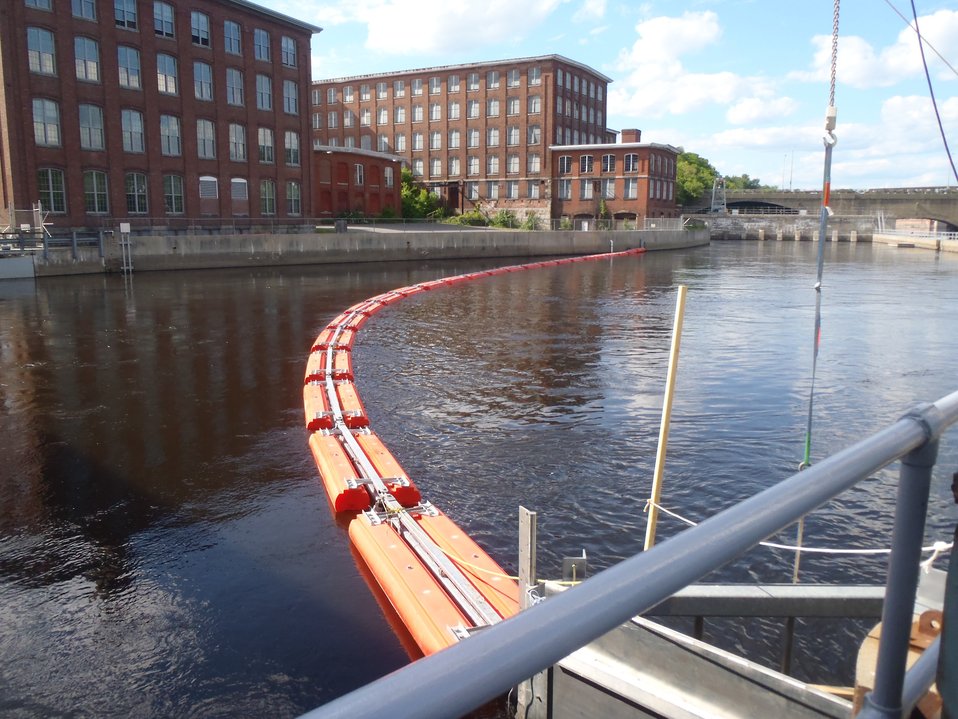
Floating DS guidance screen